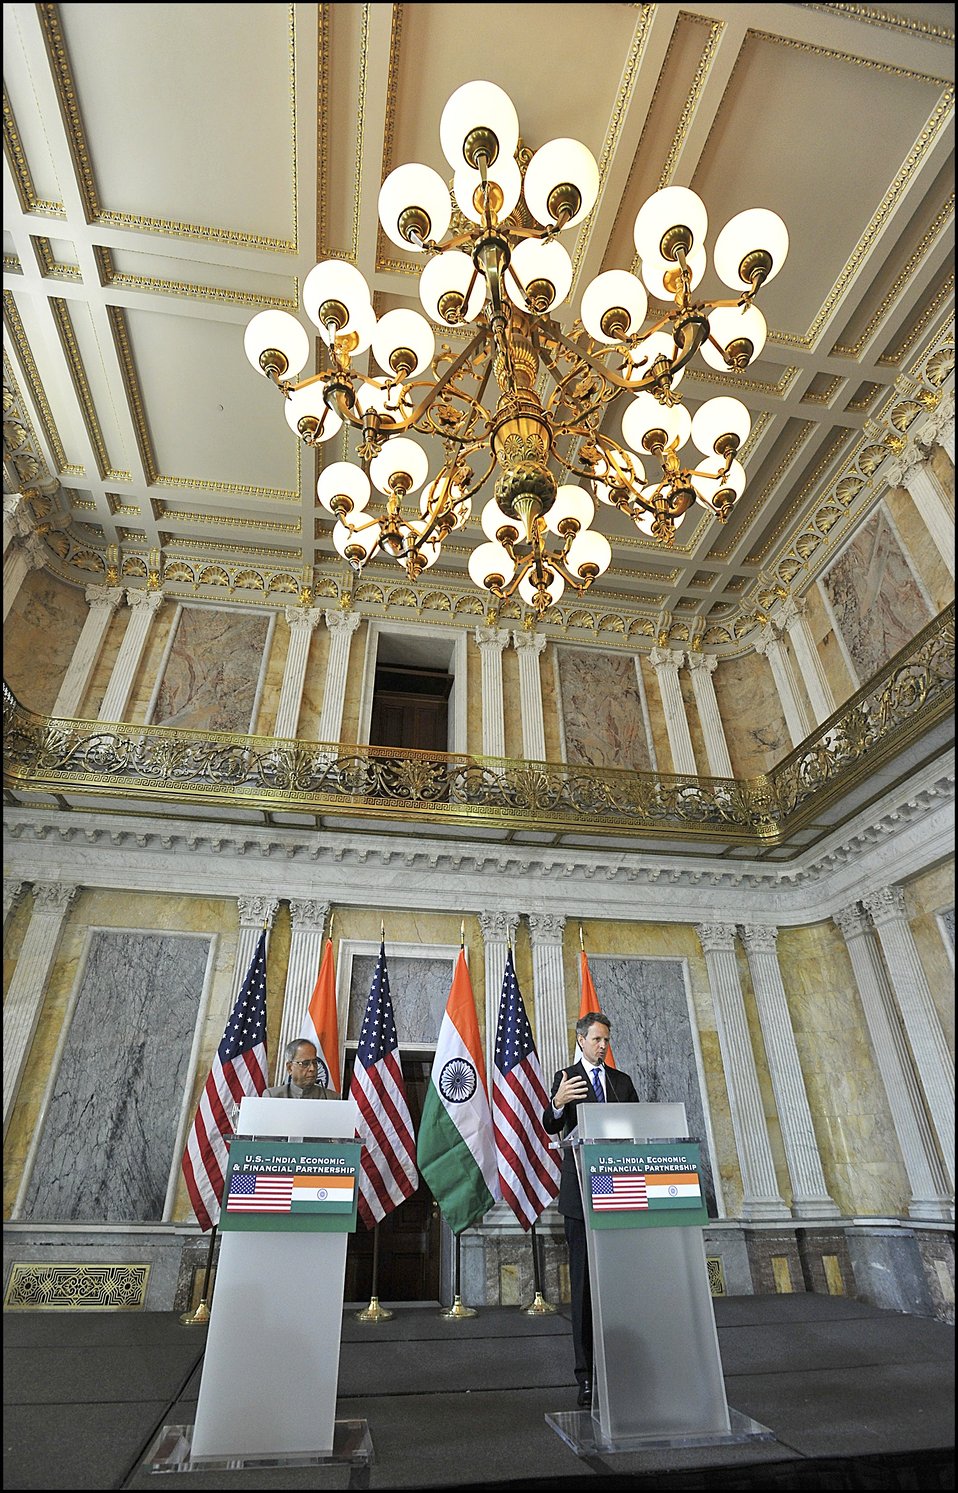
2011 U.S.-India Partnership

The second annual U.S.-India Economic and Financial Partnership concluded with a joint press conference in Treasury's Cash Room.